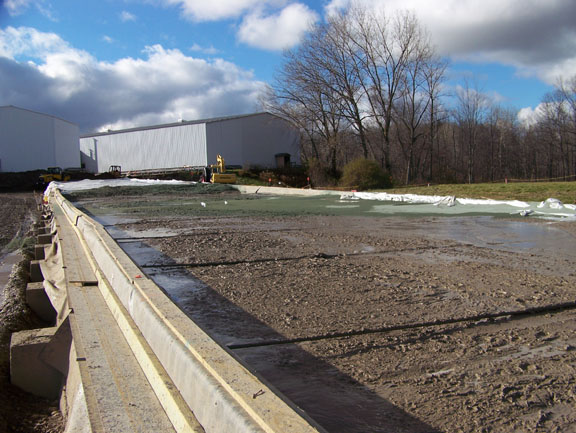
Recovery Act Workers Reach Milepost in West Valley

In December 2010, an American Recovery and Reinvestment Act crew completed construction of a long trench to curb contaminated groundwater at the West Valley Demonstration Project.

Excavated soil was placed in a reinforced containment
unit located parallel to the trench.